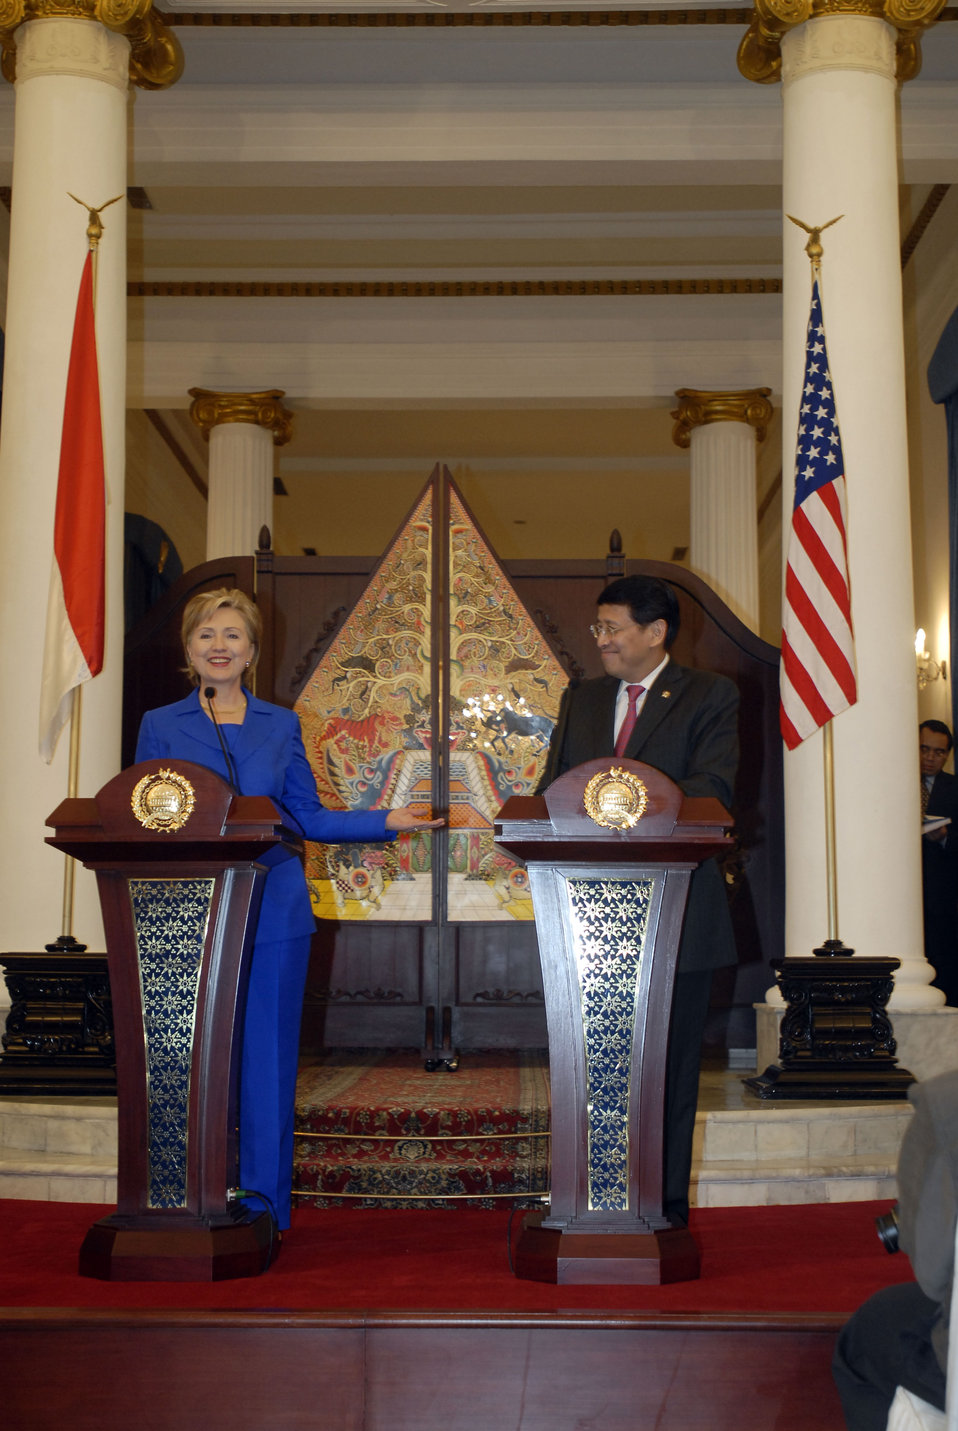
Secretary Clinton With Indonesian Foreign Minister

Secretary Clinton with the Indonesian Foreign Minister, Mr. Hassan Wirajuda, at the Joint Press Conference in Jakarta, Indonesia, Feb. 18, 2009.